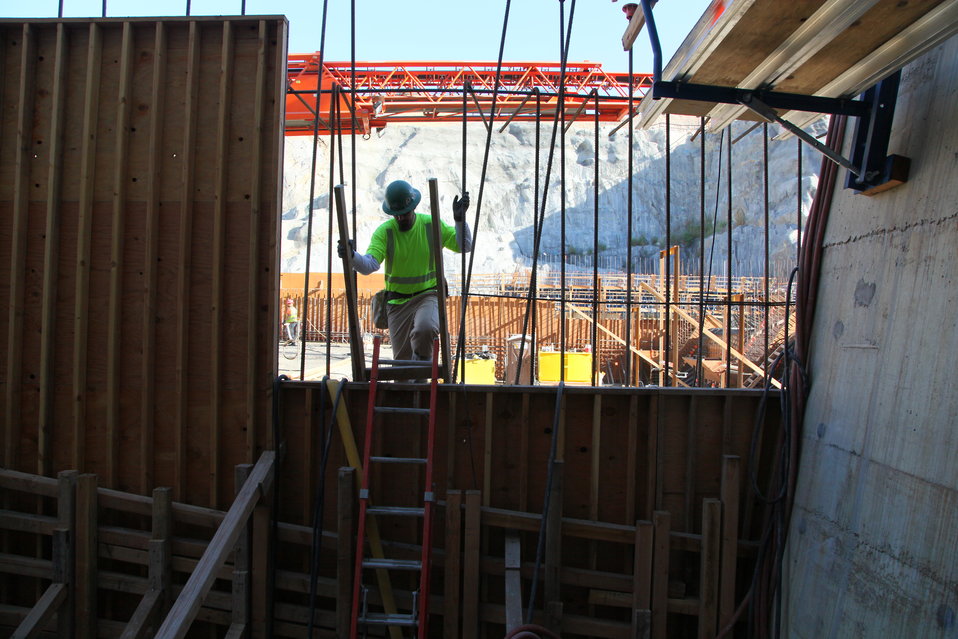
Safety a priority at Folsom Dam project

Contractors for the U.S. Army Corps of Engineers Sacramento District safely navigate - the construction zone at the auxiliary spillway using walkways and scaffolding at the Folsom Dam in Folsom, Calif., Sept. 19, 2012. Safety at the job site is a number one priority; equipment and personal safety are a requirement. The Sacramento District is building the spillway in cooperation with the U.S. Bureau of Reclamation, the Central Valley Flood Protection Board, and the Sacramento Area Flood Control Agency to improve the safety of the existing dam and reduce flood risk for the greater Sacramento area.